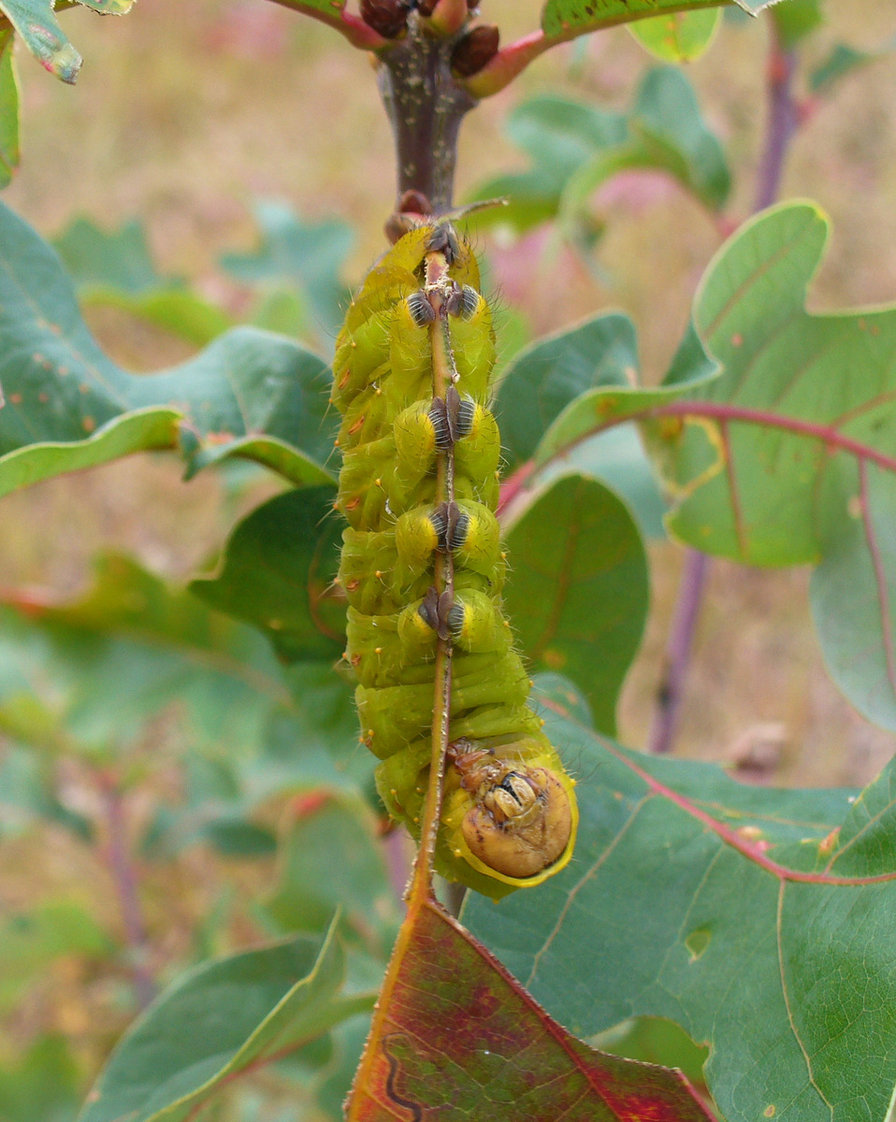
Polyphemus moth caterpillar photographed at Wertheim National Wildlife Refuge.